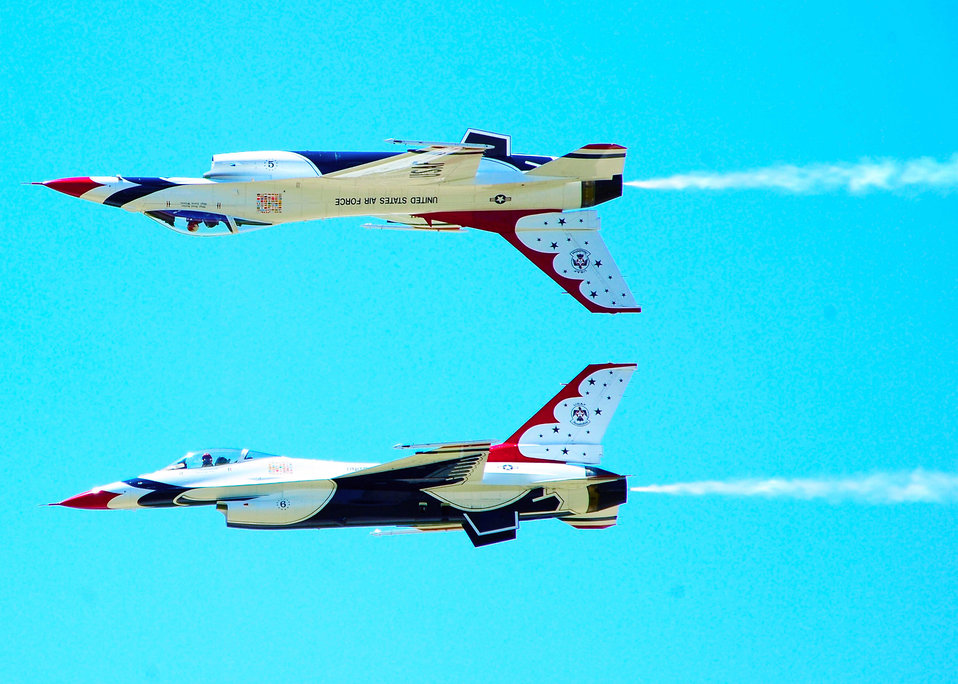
Thunderbirds at Dyess

Air Force Thunderbirds lead solo pilot, Maj. Rick Goodman, and Capt. Aaron Jelinek, opposing solo, perform the Calypso Pass during the Dyess Big Country Air Fest May 1, 2010, at Dyess Air Force Base, Texas.